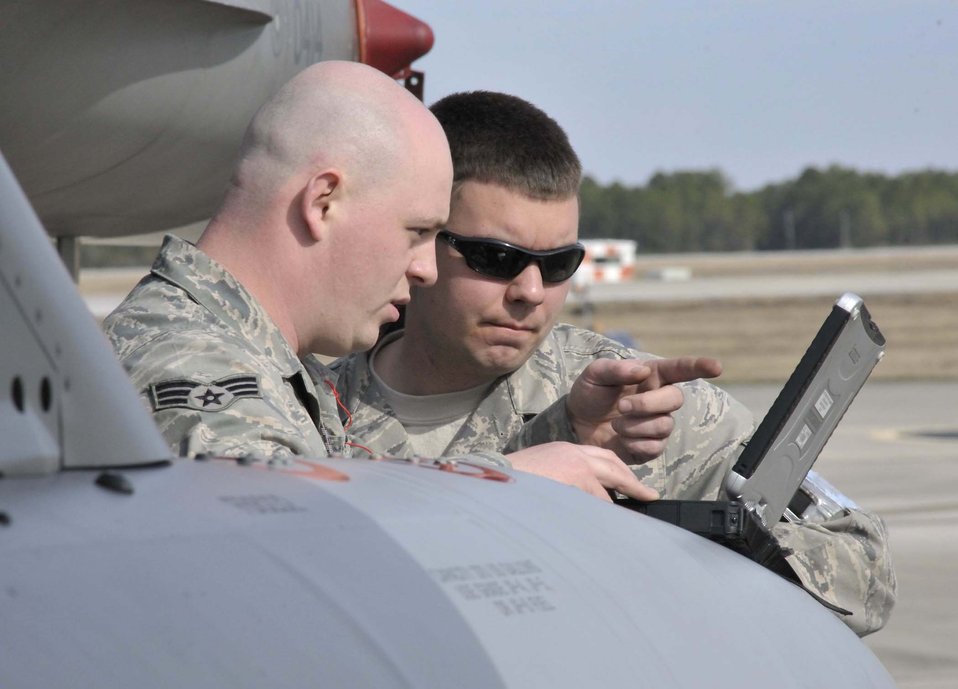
Air National Guard fighter wing preps for alert missions at Tyndall

Maintainers from the 179th Fighter Squadron, a subordinate unit of the 148th Fighter Wing out of Duluth, Minn., review technical data prior to preparing an aircrew for a mission Jan. 27, 2011, at Tyndall Air Force Base, Fla. Airmen from the 148th FW are working with members of the 53rd Weapons Evaluation Group at Tyndall AFB for two weeks to train for their air sovereignty alert missions and to validate their newly-upgraded, Block 50 F-16s.